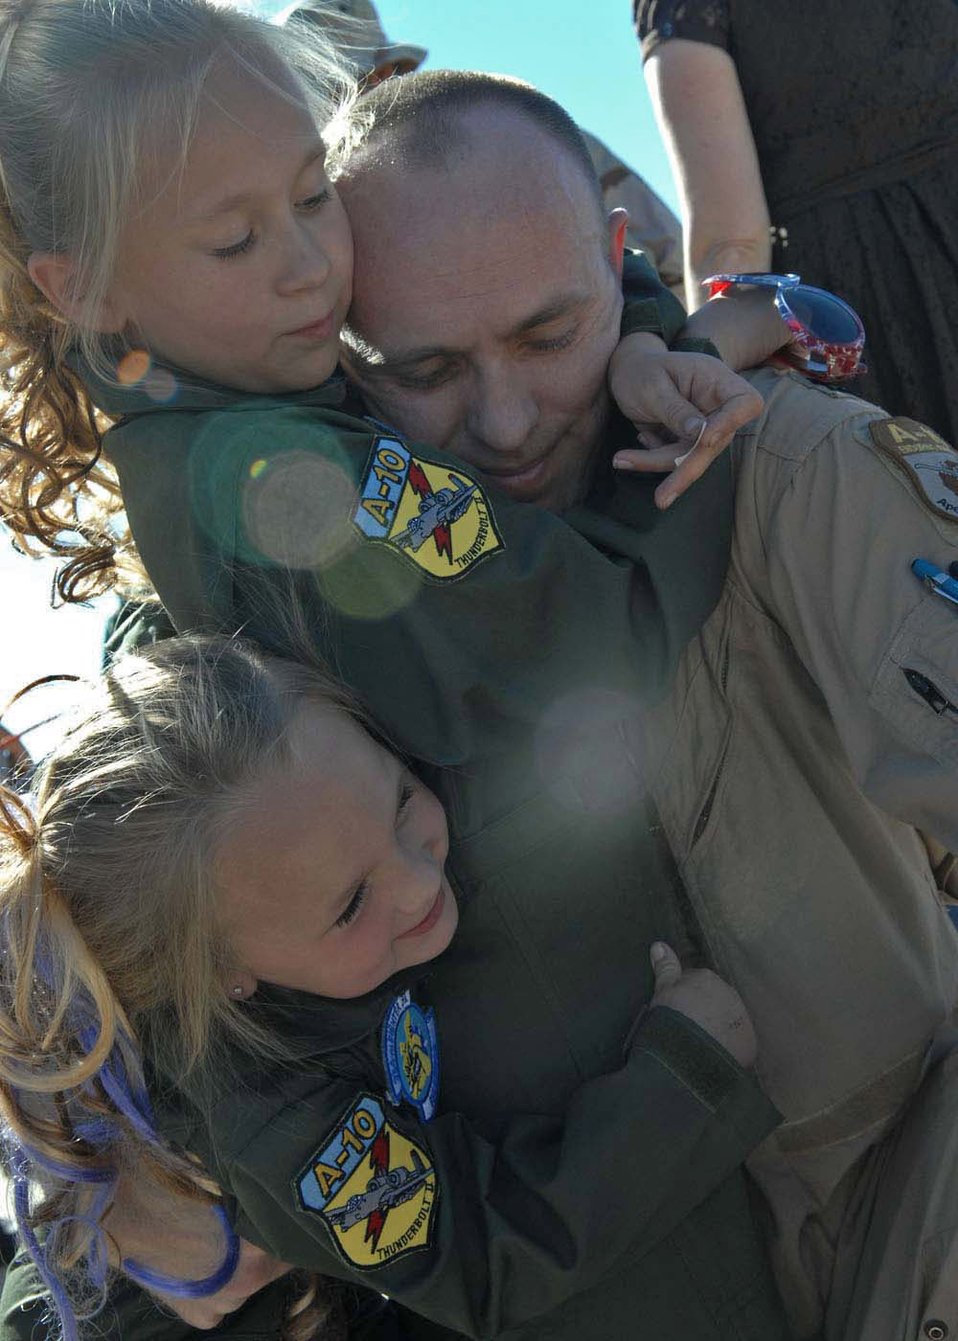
Hugs, kisses, handshakes for returnees

Captain Dennis Hargis is greeted by his daughters, Paige, 7, and Summer, 4, after returning home Oct. 23 from a deployment to Afghanistan. Captain Hargis is an A-10 Thunderbolt II pilot assigned to the 354th Fighter Squadron, Davis-Monthan Air Force Base, Ariz.